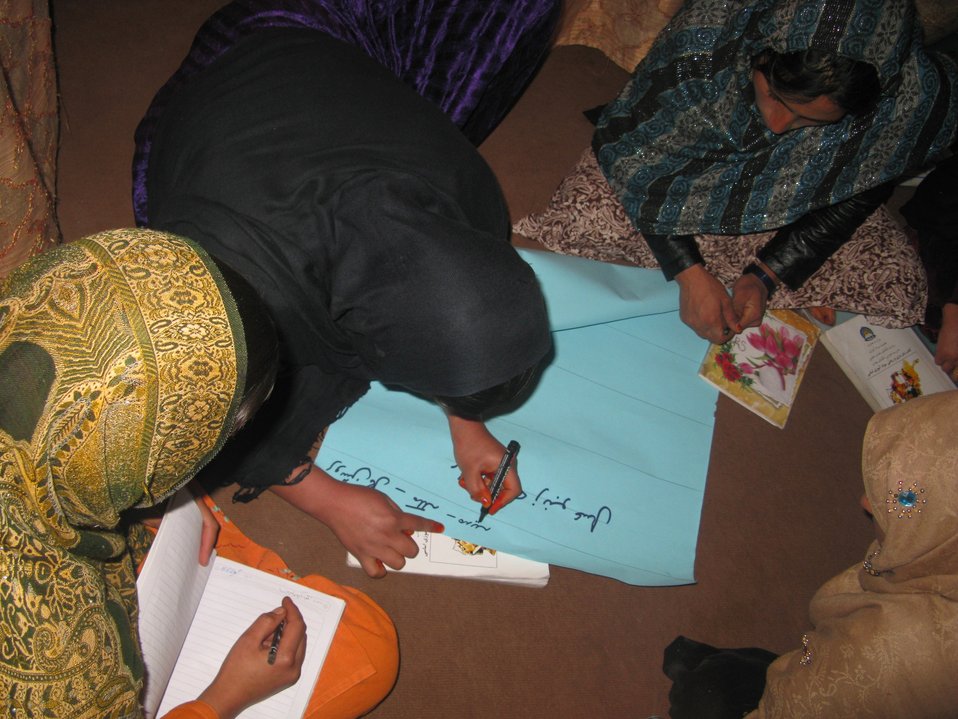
Female students work on a group assignment together in their home-based literacy class. Three months ago, these women were illiterate, while today they are comfortable reading and writing.